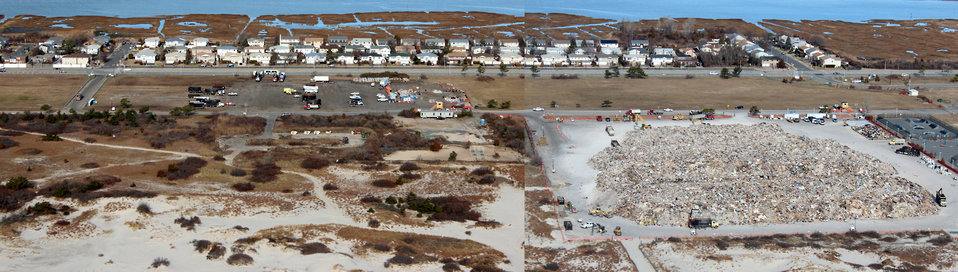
December 6, 2012 Nickerson Field Collection Area, Lido Beach, New York

The left side of this photo is EPA’s household hazardous waste collection and sorting area. To the right, shows the staging area for the larger amounts of general refuse and debris handled by the U.S. Army Corps of Engineers.